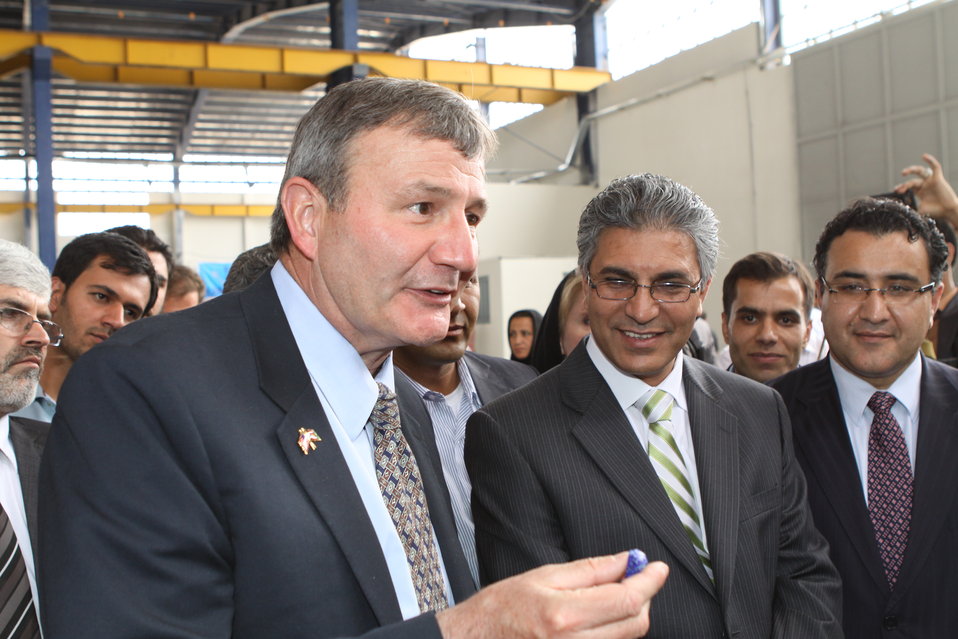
100525 Hirat Marble Conference 502